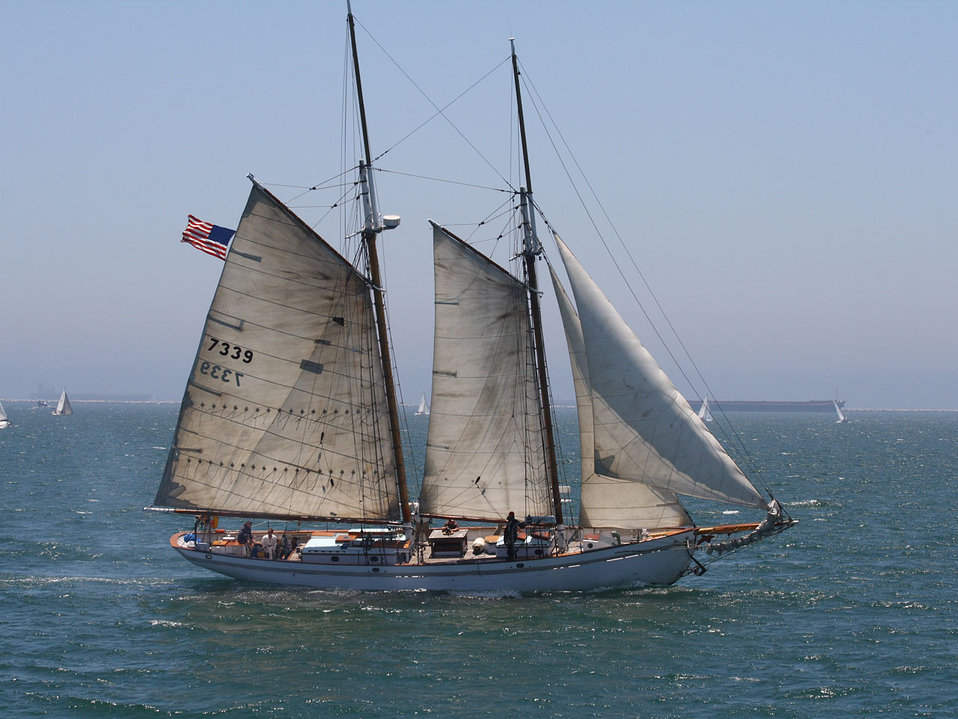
Two-masted schooner

A two-masted schooner races by belmont shores pier in long beach, california.